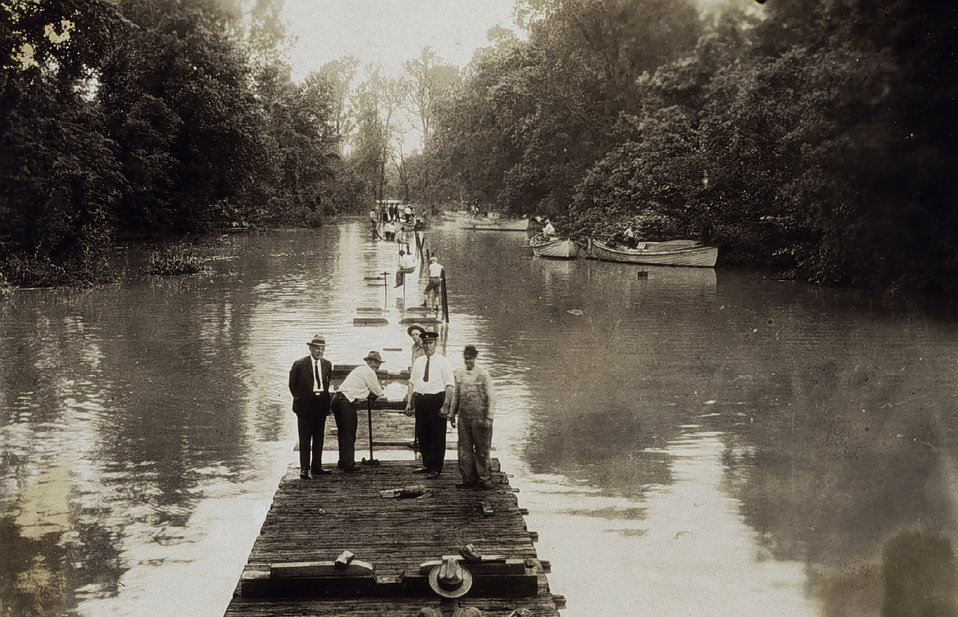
The great Mississippi River flood of 1927. Train backed into flooded area and boats floated off. C&GS officers took part in rescue efforts